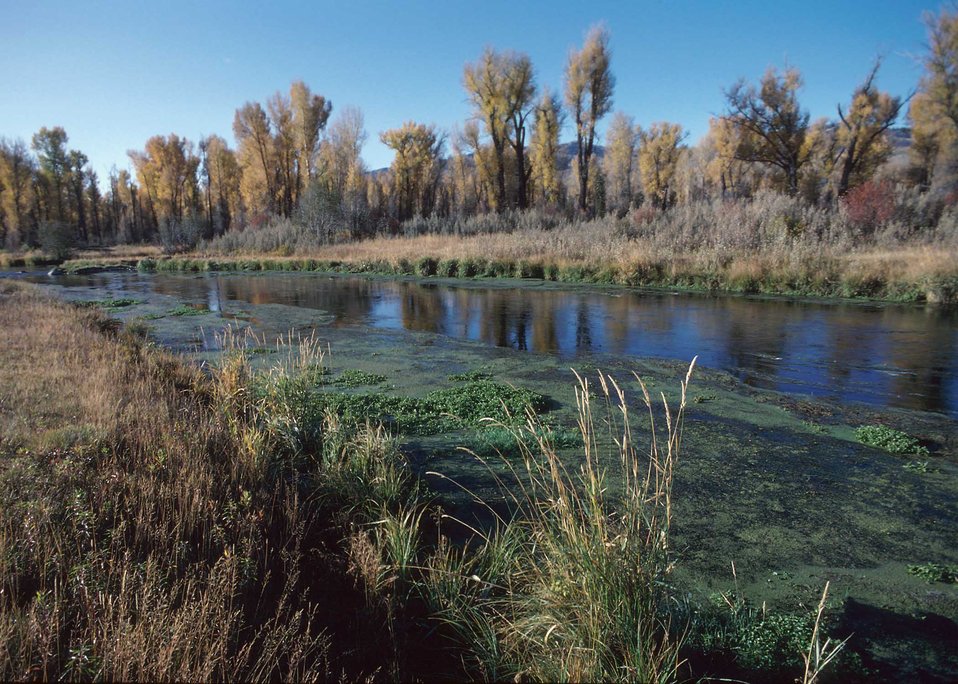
This restored wetland near Jackson, Wyoming will provide good habitat for fish and other wildlife.